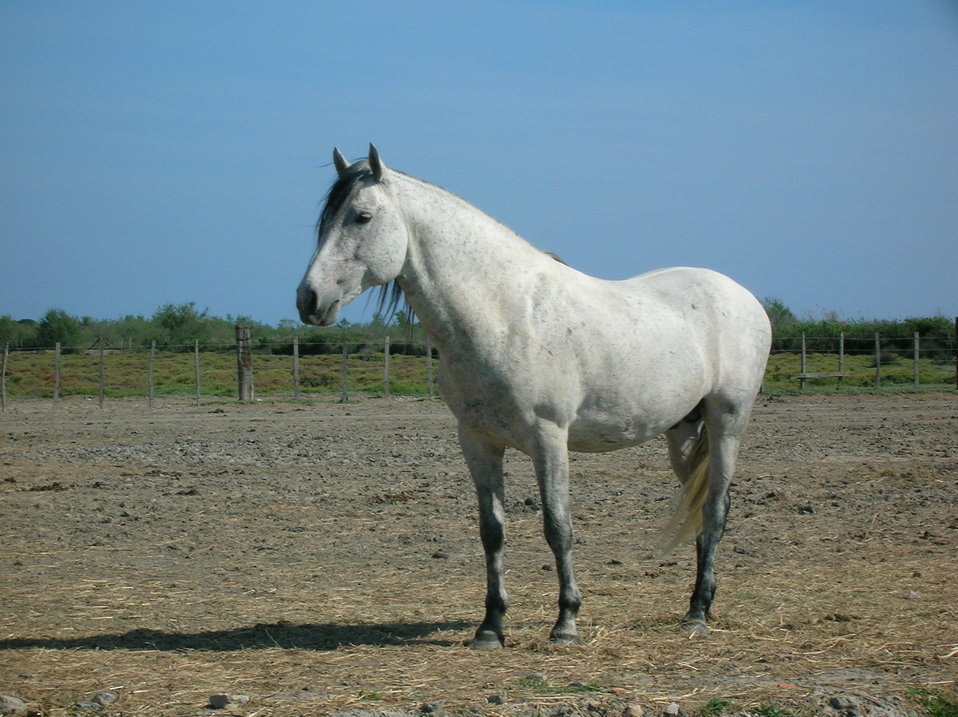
Camargue horse.
Fran√ßais†: Cheval Camargue.